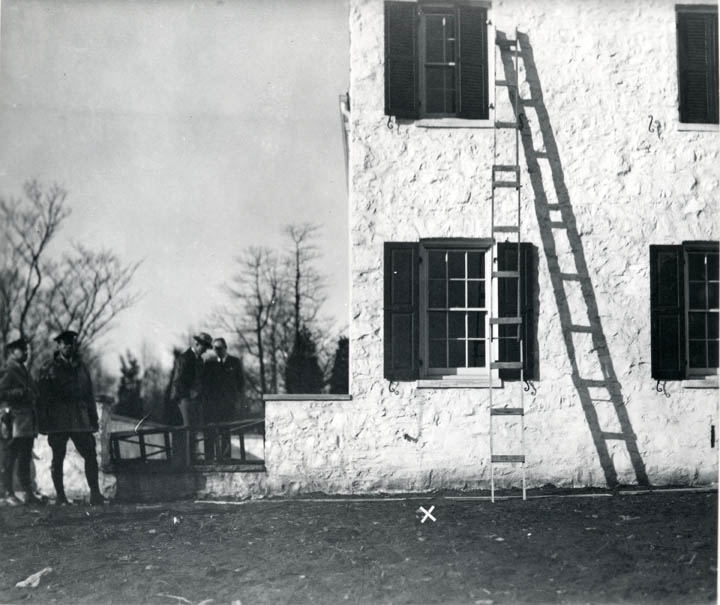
Lindy Baby Ladder

The ladder used to convict Bruno Hauptmann of kidnapping Charles Lindbergh’s 20-month old son is seen here in a contemporary crime-scene photograph in Hopewell, NJ. Scientists at the U.S. Forest Products Laboratory in Madison, WI were able to prove that one of the steps used in the ladder was from a plank of wood in Hauptmann’s attic.